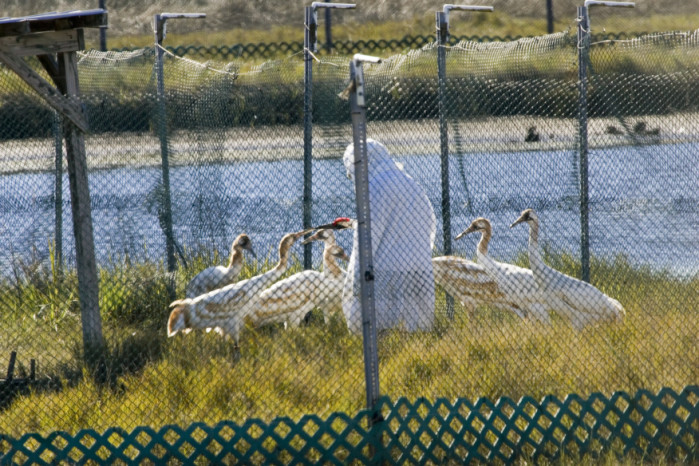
Reintroduction at Chassahowitzka National Wildlife Refuge

Costumed human feeding juvenile whooping cranes with puppet in reintroduction pen at Chassahowitzka National Wildlife Refuge in Florida.